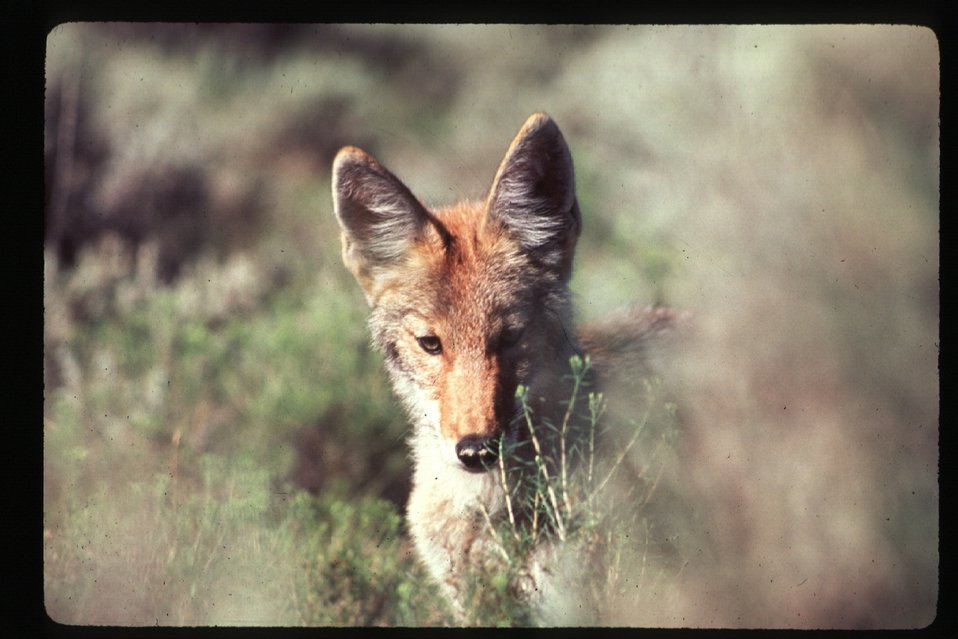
Coyote Wildlife LSRD Lower Snake River District